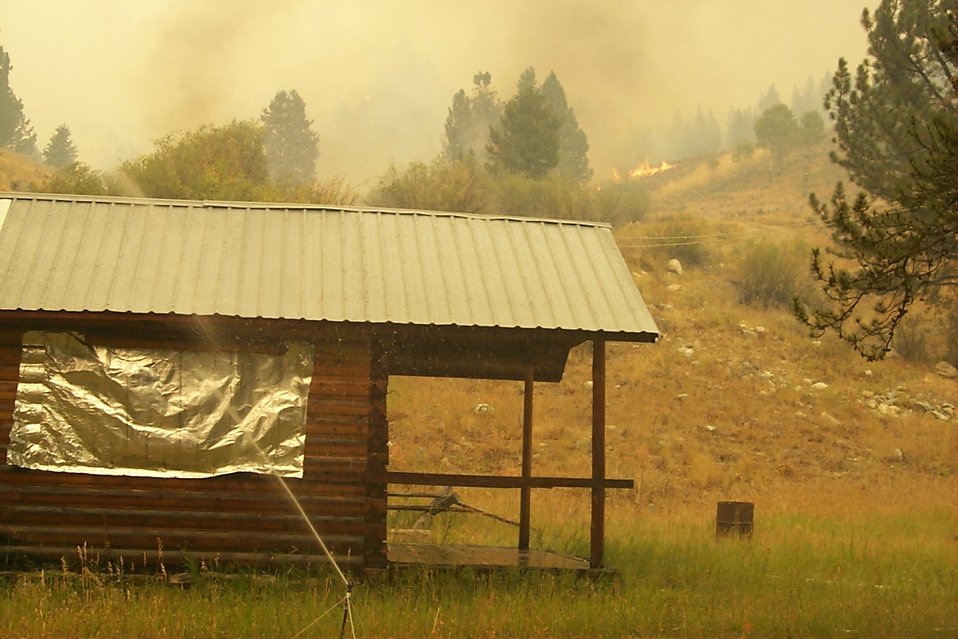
Fire retardant measures Urban interface Fire Clearwater Fire Salmon Field Office USRD Upper Snake River District